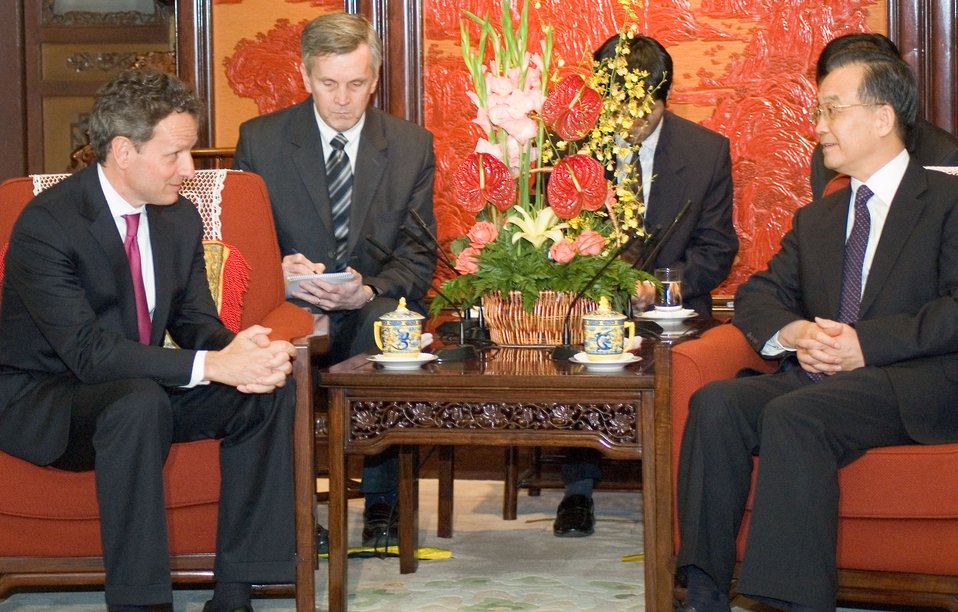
China trip: May 31-June 2 2009

Secretary Geithner meeting with Chinese Premier Wen Jiabao at Zhongnanhai Leadership Compound.